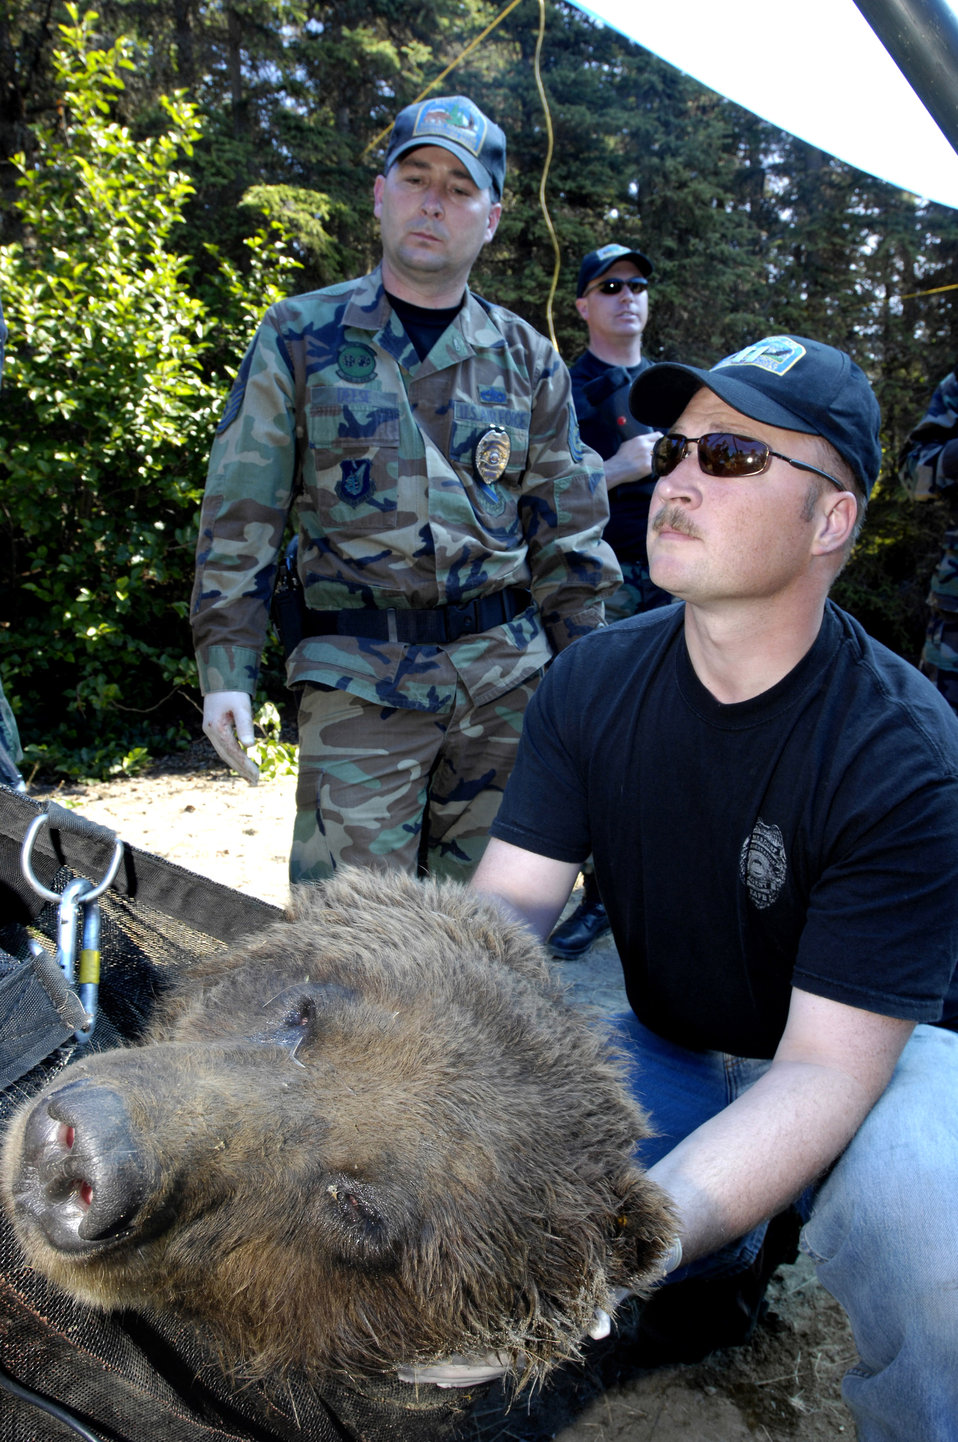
Unbearable time at Elmendorf

Capt. Alan Moore supports the head of a brown bear that was trapped and tranquilized as Tech. Sgt. Doug Deese monitors to make sure the bear's well-being is maintained July 17 at Elmendorf Air Force Base, Alaska. Both Captain Moore and Sergeant Deese are military conservation agents and are helping the Alaska Department of Fish and Game take DNA, blood and hair samples, measurements and fit the bear with a tracking collar that will allow the bear's movements to be monitored by global positioning satellites. The bear, a female around 6 years old and weighing more than 400 pounds, had been spotted near the base golf course and a barrel trap was set by base conservation agents. After trapping and collaring the bear, agents relocated the bear to a remote part of the base and monitored it from a distance until the bear woke and moved into the woods. Captain Moore is a navigator for the 962nd Airborne Air Control Squadron and Sergeant Deese is a F-15 crew chief.